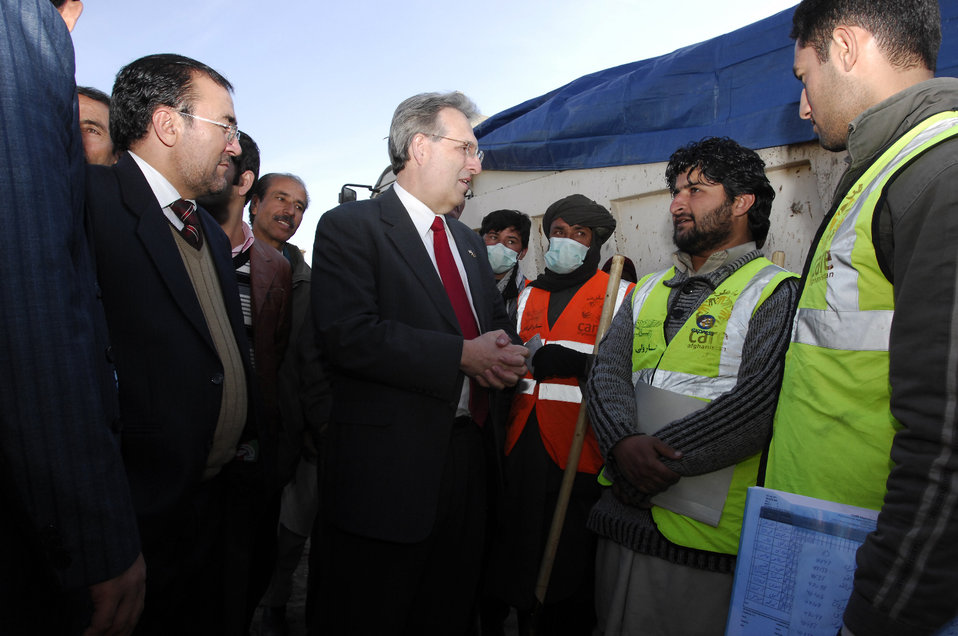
Care00